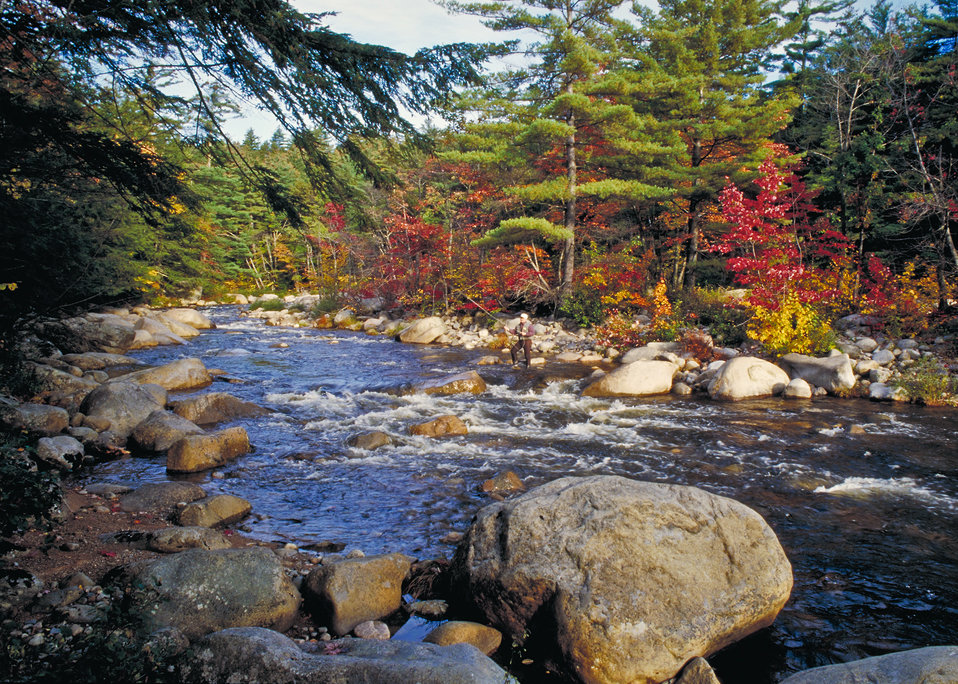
Fly fishing is one of the many popular outdoor recreational activities in United States National Forest. The solitude of a forest stream in fall offers relaxation and a kaleidoscope of color.